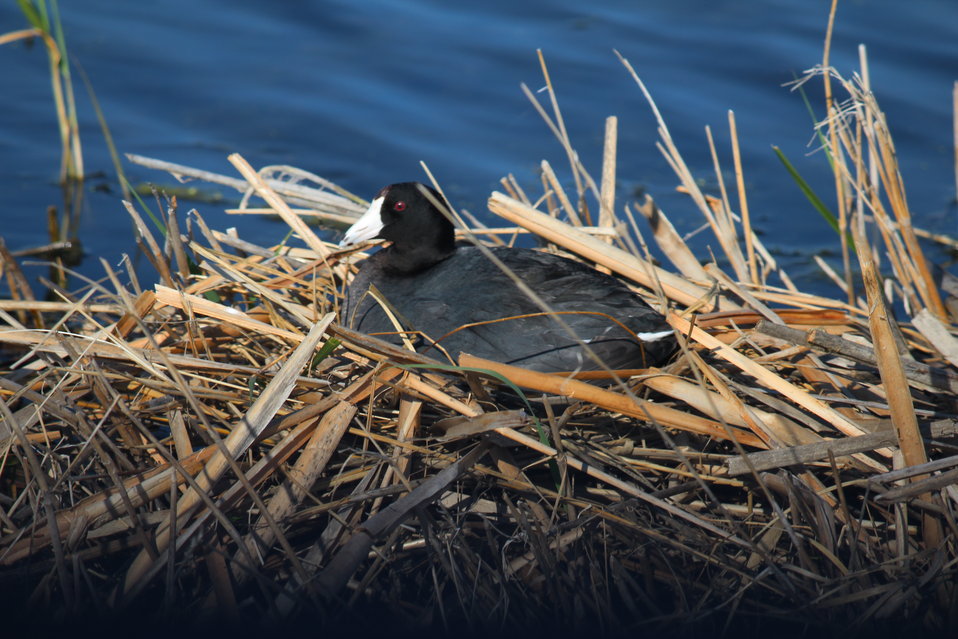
Coot On Nest

This Coot carefully gaurded her nest and wasn't moving for anyone.

Location: Long Lake WMD, Burleigh County, North Dakota

Credit: Doug Mosser / USFWS

Photo Contest Entry #165